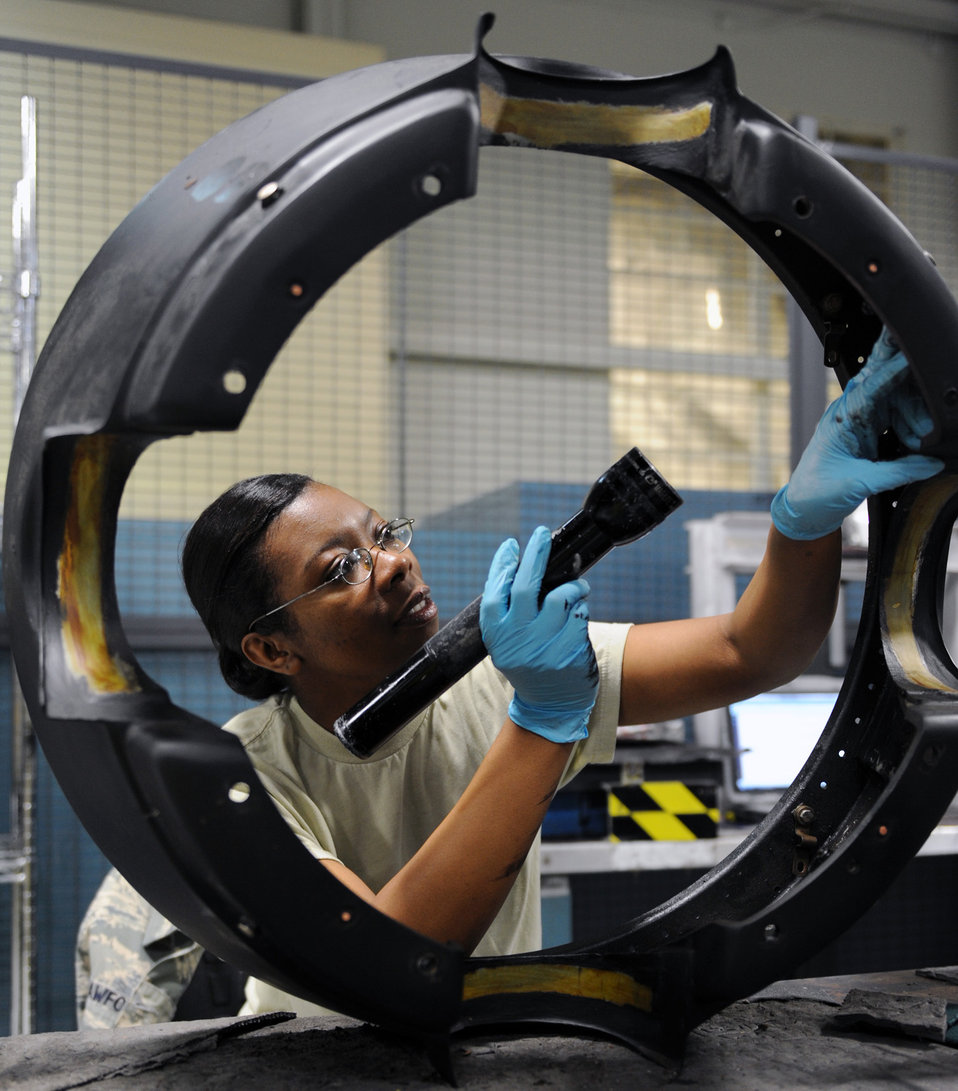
C-130 engine maintenance

Staff Sgt. Alecia Crawford inspects a C-130 Hercules engine component for cracks May 31, 2011, at Little Rock Air Force Base, Ark. Sergeant Crawford is an aerospace propulsion journeyman assigned to the 19th Component Maintenance Squadron.